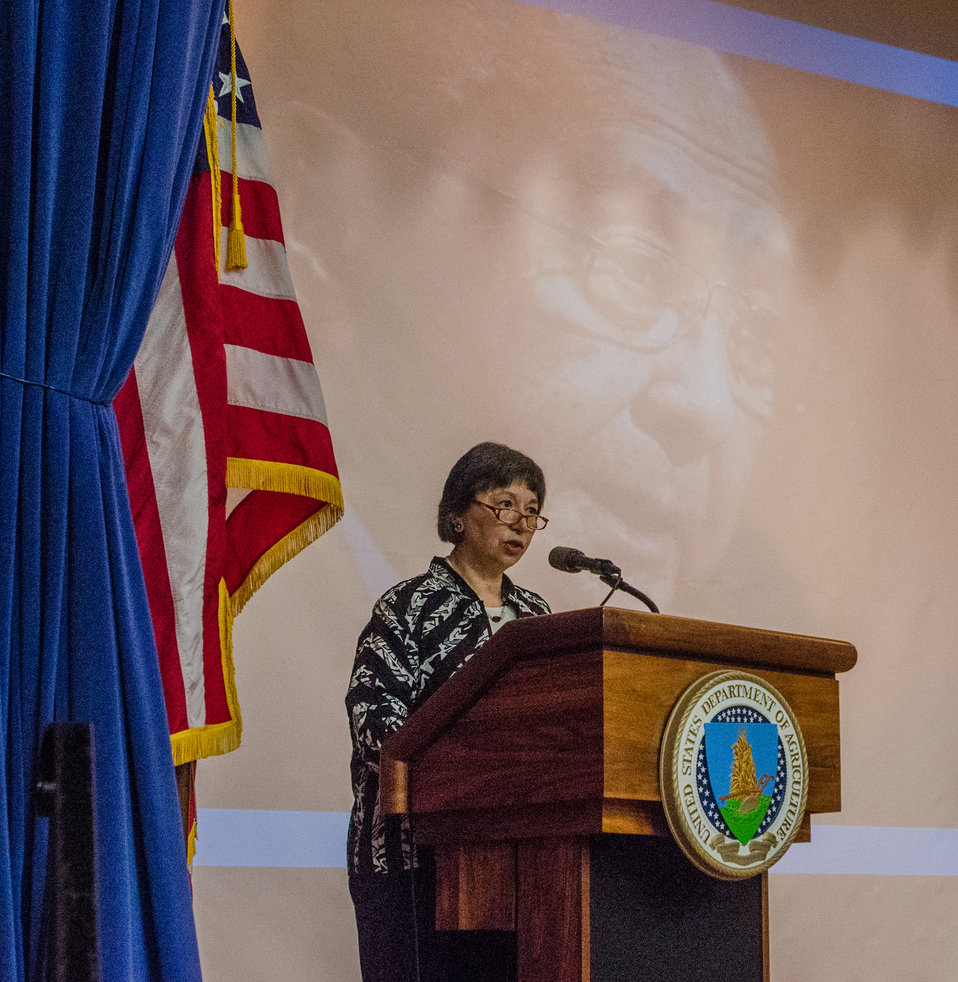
U.S. Department of Agriculture (USDA) Foreign Agricultural Service (FAS) Associate Administrator Janet Nuzum presents a tribute to Senator Daniel Inouye, during the USDA Asian Pacific American Heritage Month Observance, at the USDA headquarters in Washington, D.C., on Thursday, May 23, 2013. This year’s theme is “Building leadership; Embracing the Cultural Values and Inclusions.”